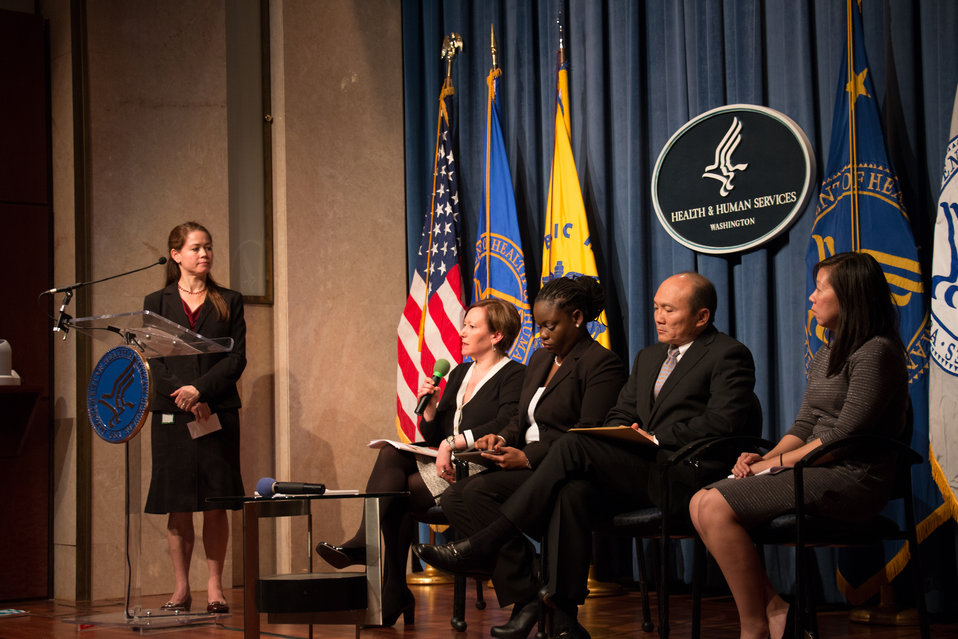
VHAP Launch (296 of 511)